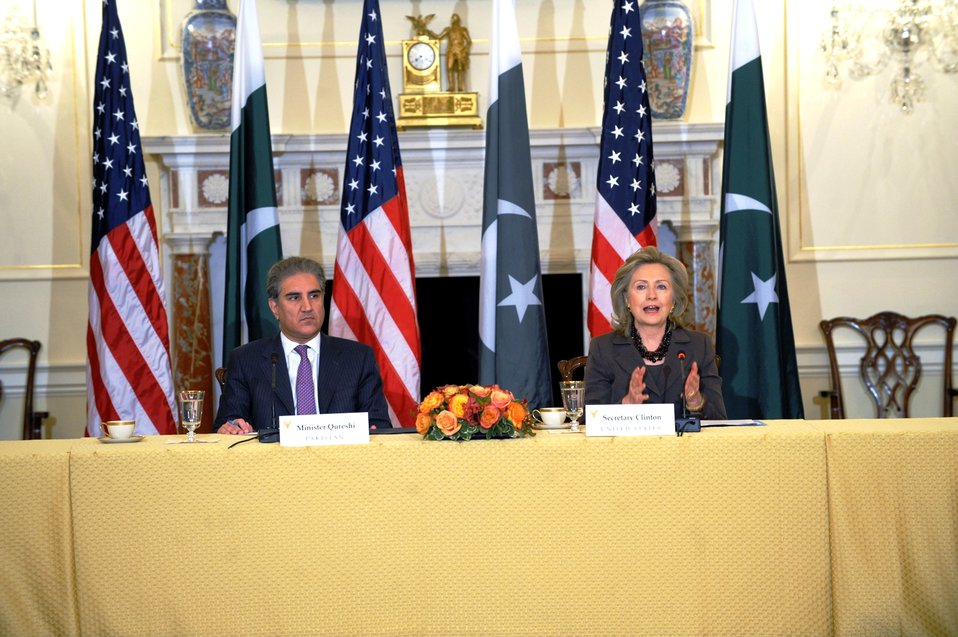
Secretary Clinton and Pakistani Foreign Minister Qureshi Open the U.S.-Pakistan Plenary Session

U.S. Secretary of State Hillary Rodham Clinton and Pakistani Foreign Minister Shah Mahmood Qureshi deliver opening remarks at the U.S.-Pakistan Dialogue Plenary Session at the U.S. Department of State in Washington, DC October 21, 2010. [Public Domain/ Public Domain]